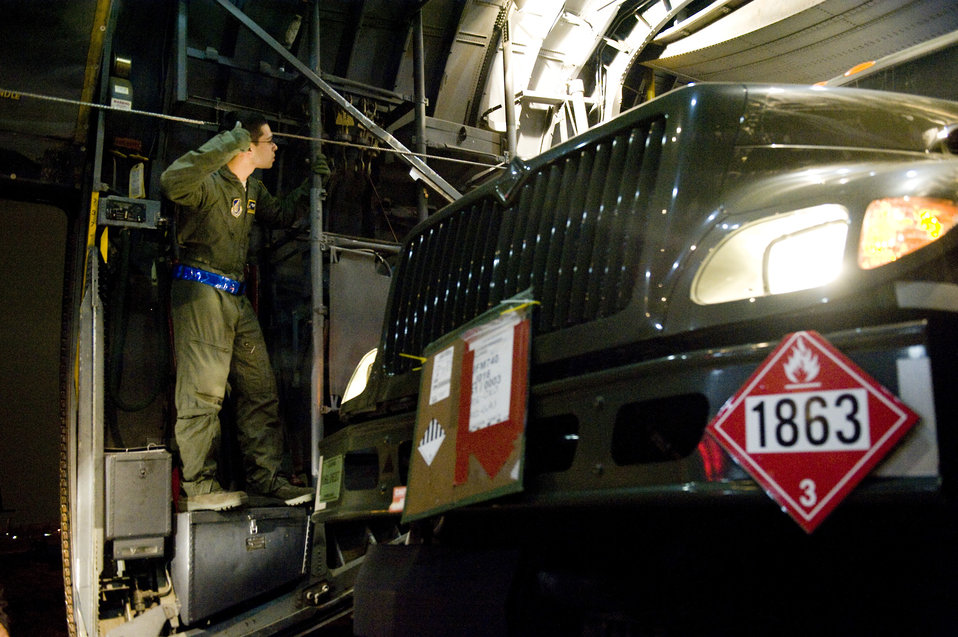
Yokota AB Airmen deliver fuels truck to aid Japan's relief efforts

Airman 1st Class Giovanny Miranda, 36th Airlift Squadron, watches the sides for clearance as a fuels truck is loaded onto a C-130H Hercules here March 15. The fuels truck was taken to Yamagota Airport to support Japan'e earthquake and tsunami relief efforts.